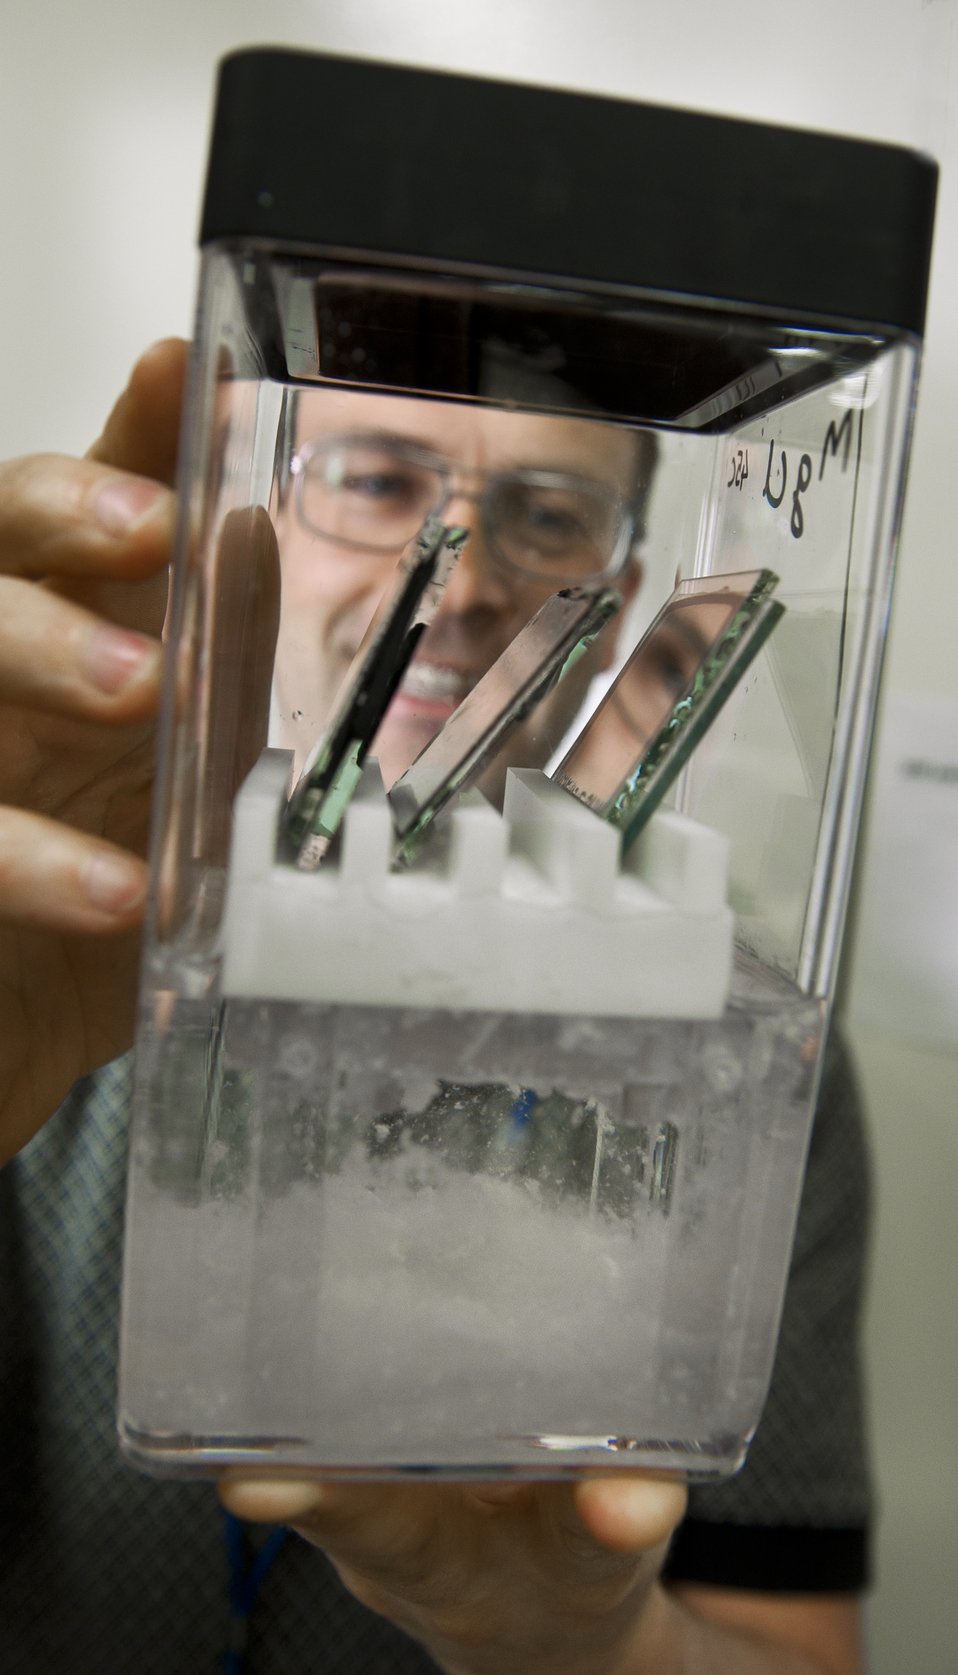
PV Reliability

NREL engineer Michael Kempe, holds photovoltaic samples he is exposing to a saturated salt solution to control humidity.